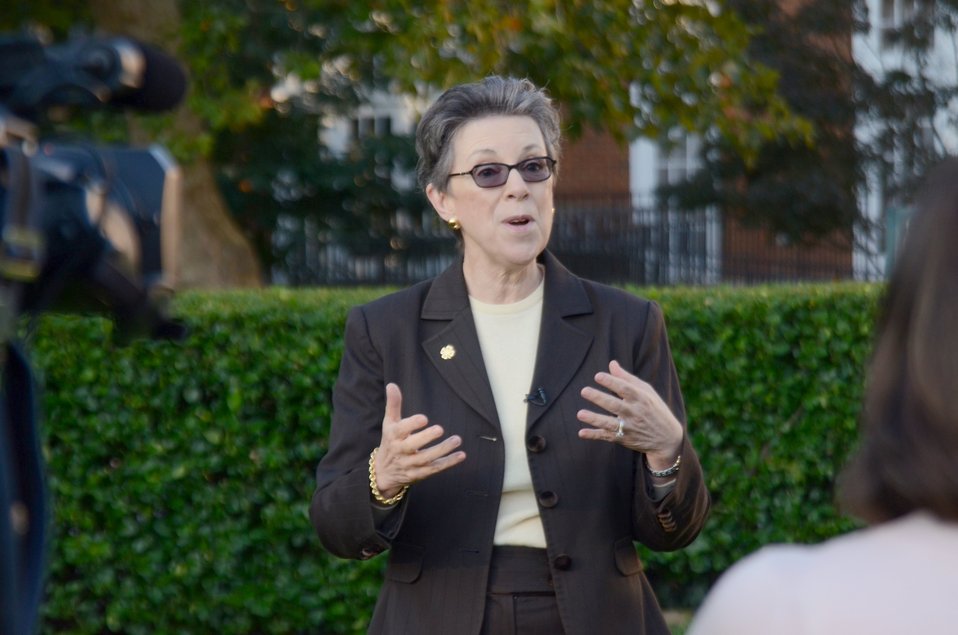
Dr. Catherine Woteki, Under Secretary for Research, Education and Economics is interviewed by the 4H Media Production Team on the 4H campus in Chevy Chase, MD, on Wednesday, October 5, 2011.